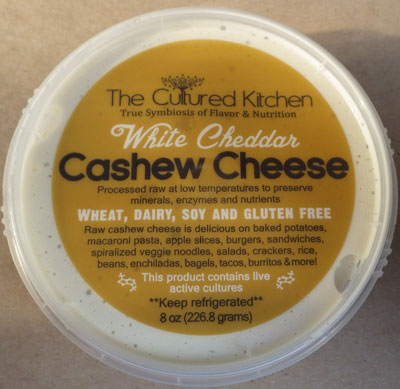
RECALLED – Non-dairy cashew cheese products

ecember 31, 2013 – The Cultured Kitchen® Voluntarily Recalls Cashew Cheese Due To Possible Risk Of Contamination From Salmonella
Photos.